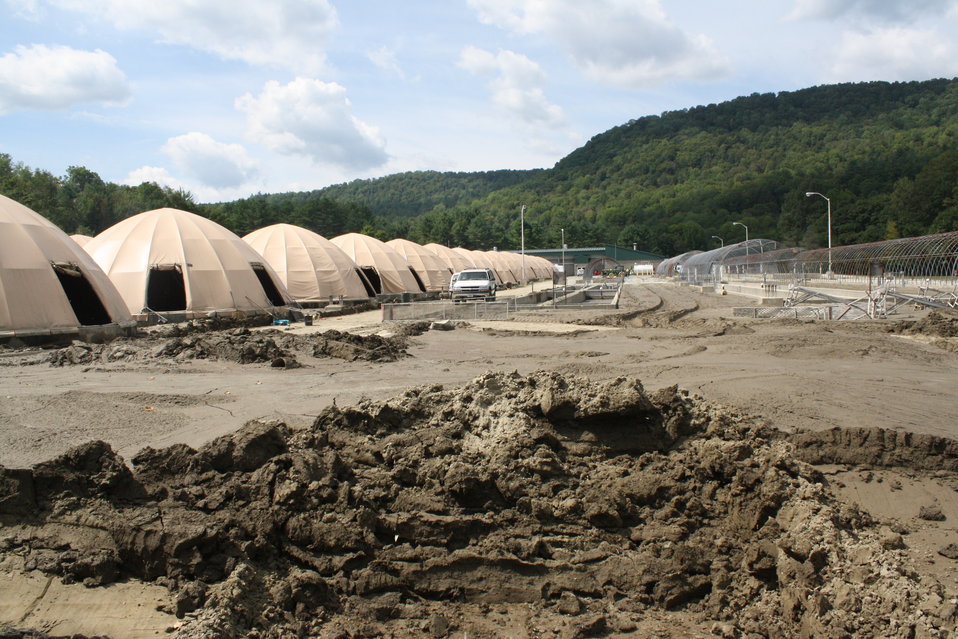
River sediment carried by flood waters deposited on Hatchery grounds

Significant amounts of river sediment were deposited on White River National Fish Hatchery grounds during the Hurricane Irene flood event.